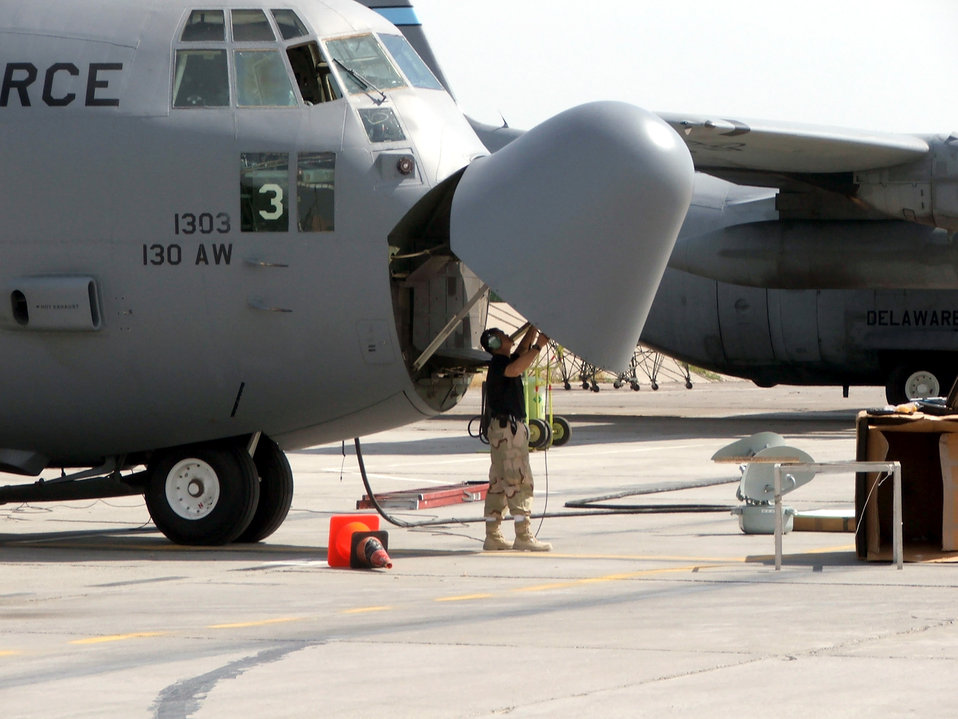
Who nose?

KARSHI-KHANABAD AIR BASE, Uzbekistan -- A C-130 Hercules maintenance Airman replaces the radar in the nose of a C-130 here April 27. He and other Airmen of the 416th Air Expeditionary Group are deployed here supporting Operation Enduring Freedom.